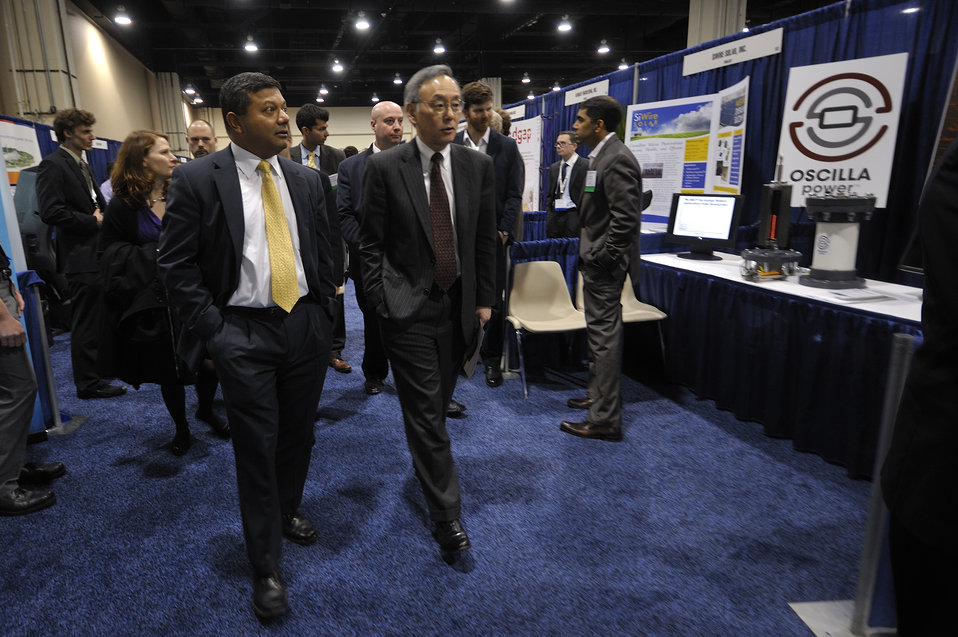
ARPA-E Energy Innovation Summit 2011, 51 of 83

Steven Chu, Secretary, United States Department of Energy, and Dr. Arun Majumdar, Director, ARPA-E, tour the Summit's Technology Showcase.